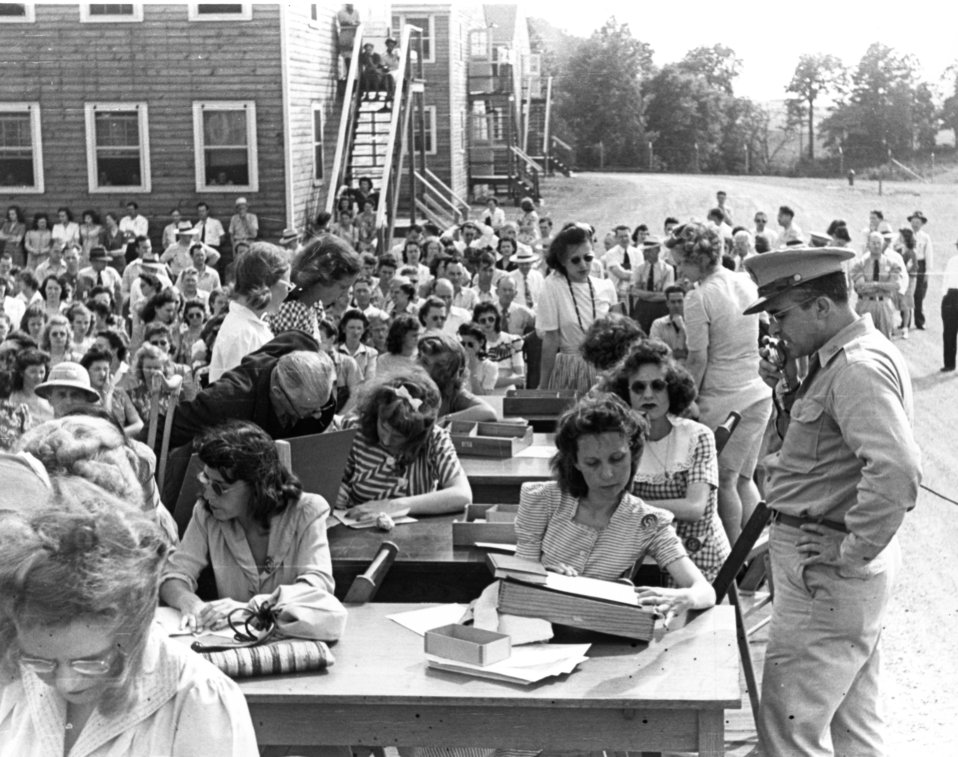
Services at Oak Ridge